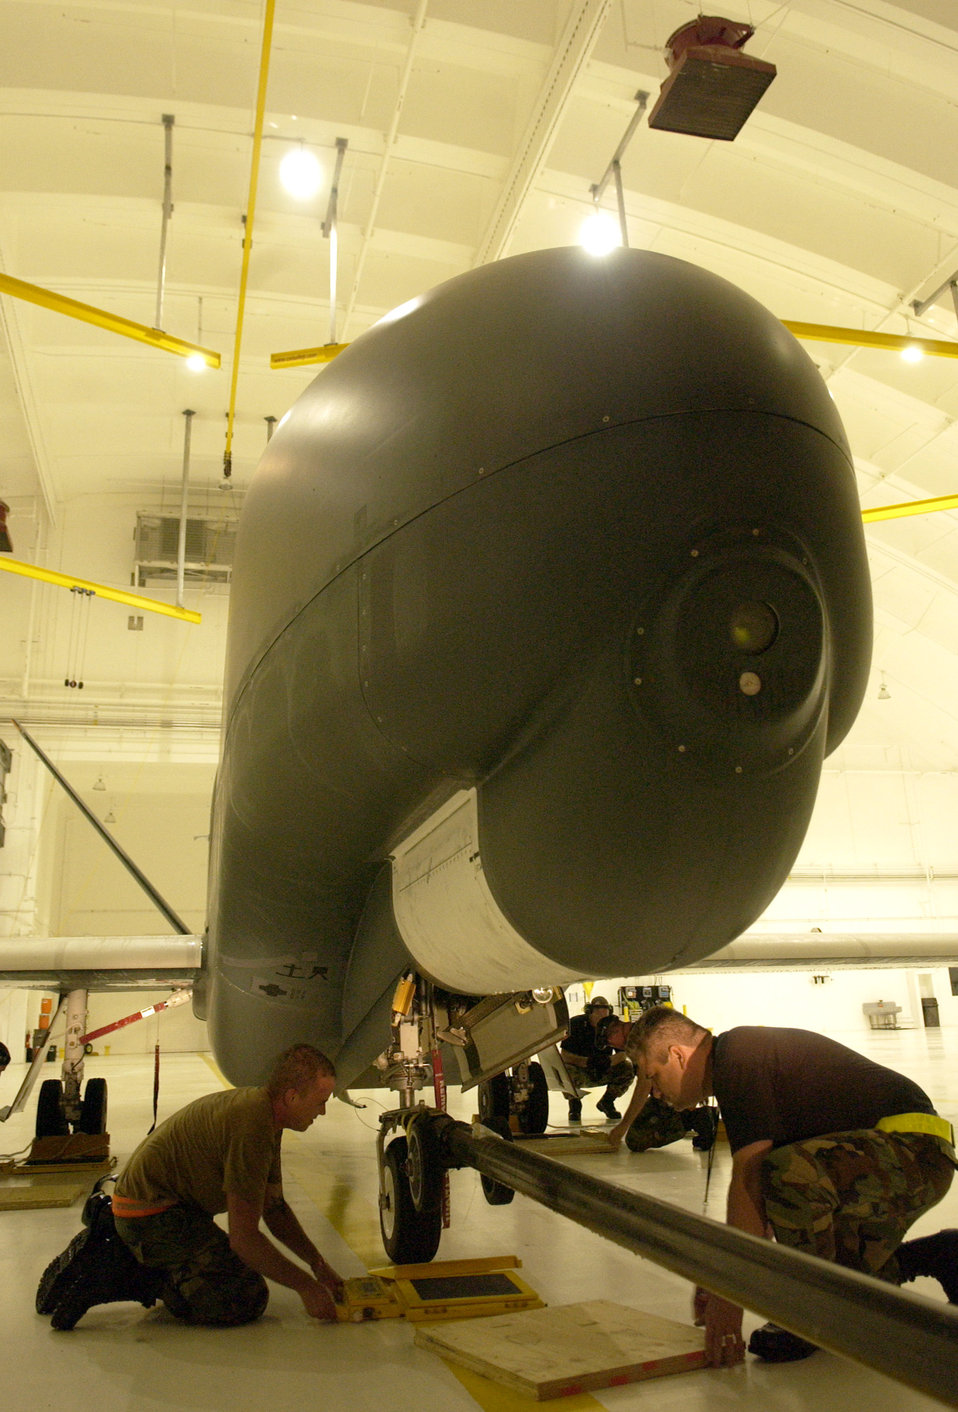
Beale Global Hawk deploys for first time

Airman deployed from Beale Air Force Base, Calif., prepare to weigh the Global Hawk before refueling in a hangar July 19 at Andersen Air Force Base, Guam. The aircraft has a wing span of 116 feet and is designed to cruise at extremely high altitudes. This marked the first time a Global Hawk deployed in support from the 9th Reconnaissance Wing at Beale Air Force Base, Calif.